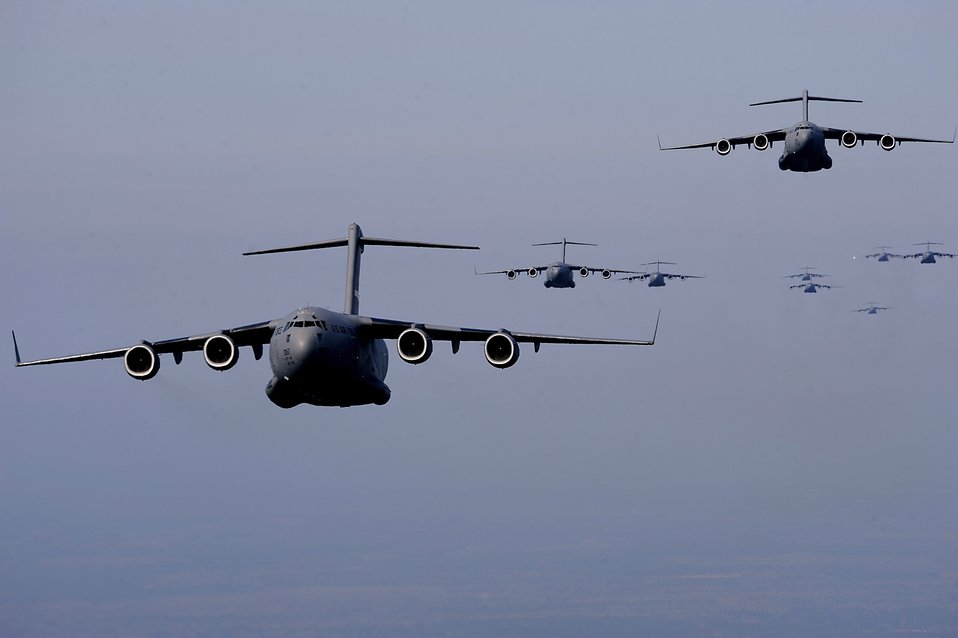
Show of force

C-17 Globemaster IIIs from the 437th and 315th airlift wings fly in formation Dec. 18 over Charleston, S.C. The C-17s participated in a strategic brigade airdrop exercise involving a 13-ship formation to meet the Army's goal of airdropping a brigade's worth of troops and equipment (about 3,250 Soldiers and 3,450 tons of equipment). The C-17s are from Charleston Air Force Base, S.C.